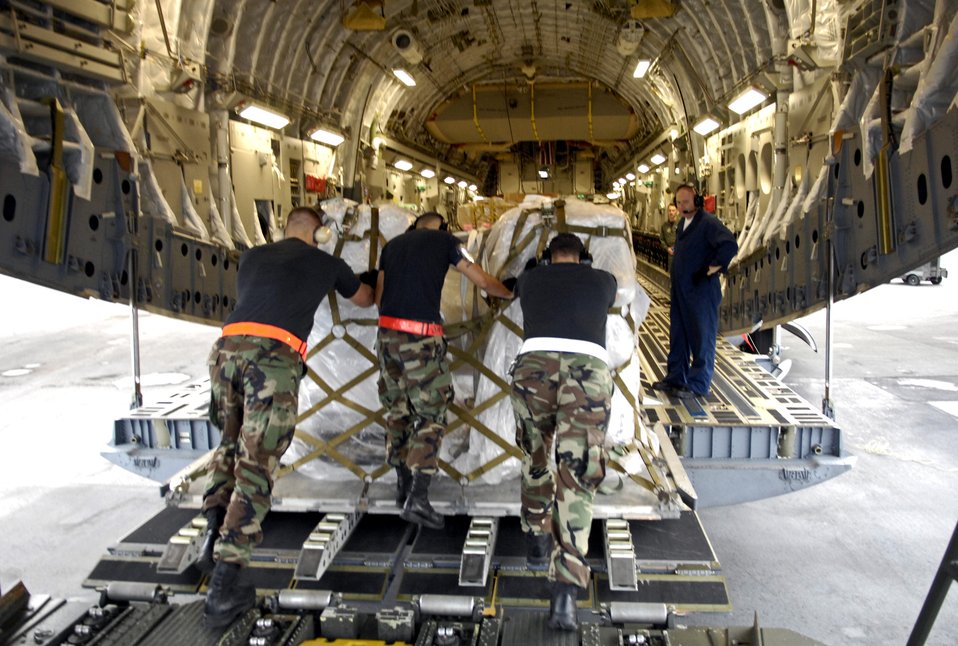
Sound support

Members from the 735th Air Mobility Squadron load a pallet of two ultrasound units on a C-17 Globemaster III at Hickam Air Force Base, Hawaii, Nov. 29. The ultrasound units are being delivered to Thuy Duong Village, Vietnam.